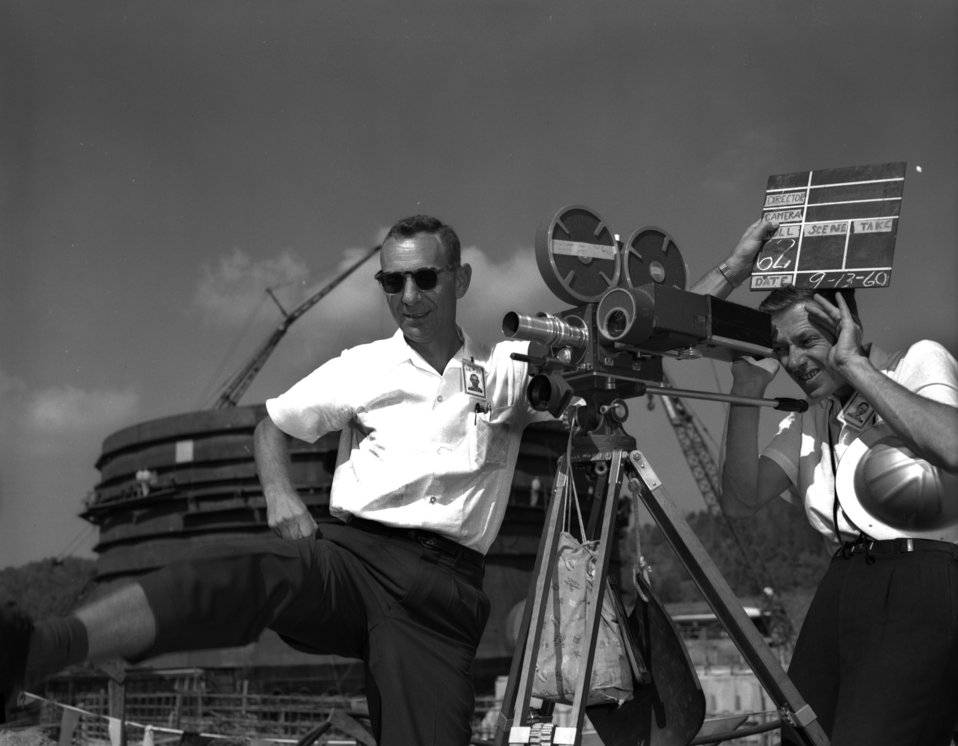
J.E. Westcott and E.E. Stokely at EGCR Oak Ridge

60-0949 DOE photo by T.R. Cook

J.E. Westcott and E.E. Stokely at EGCR publicity shot for ORO film Oak Ridge Tennssee 9/20/1960